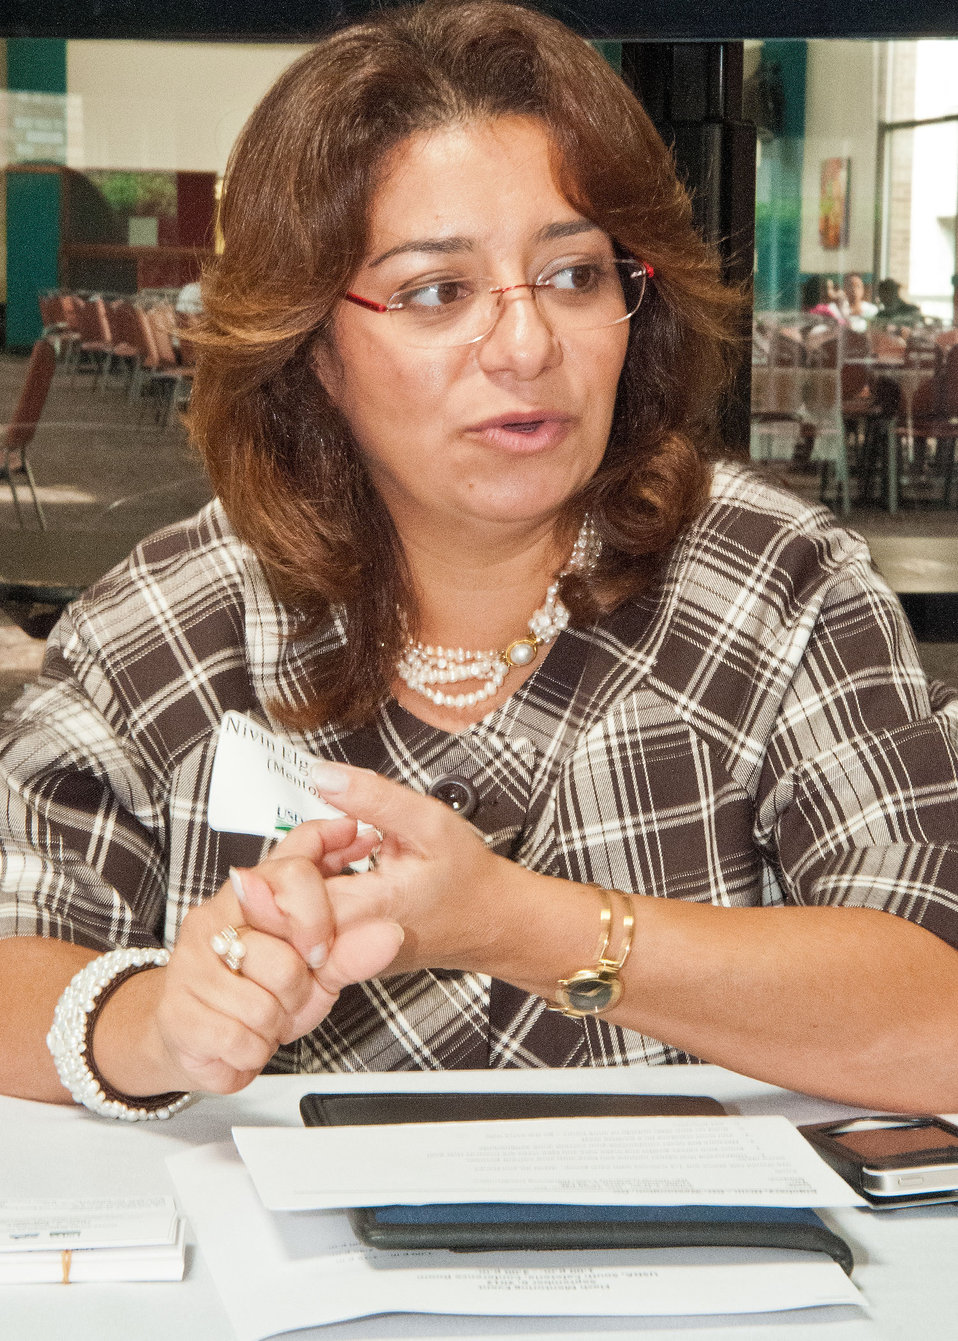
U.S. Department of Agriculture (USDA) Rural Development (RD) and mentor Nivin Elgohary offers advice on “Career Development” ” at USDA’s Office of Human Resources Management (OHRM) Virtual University’s Fall Flash Mentoring Event at USDA in Washington, D.C. on Thursday, Sept. 6, 2012 in Washington, DC.